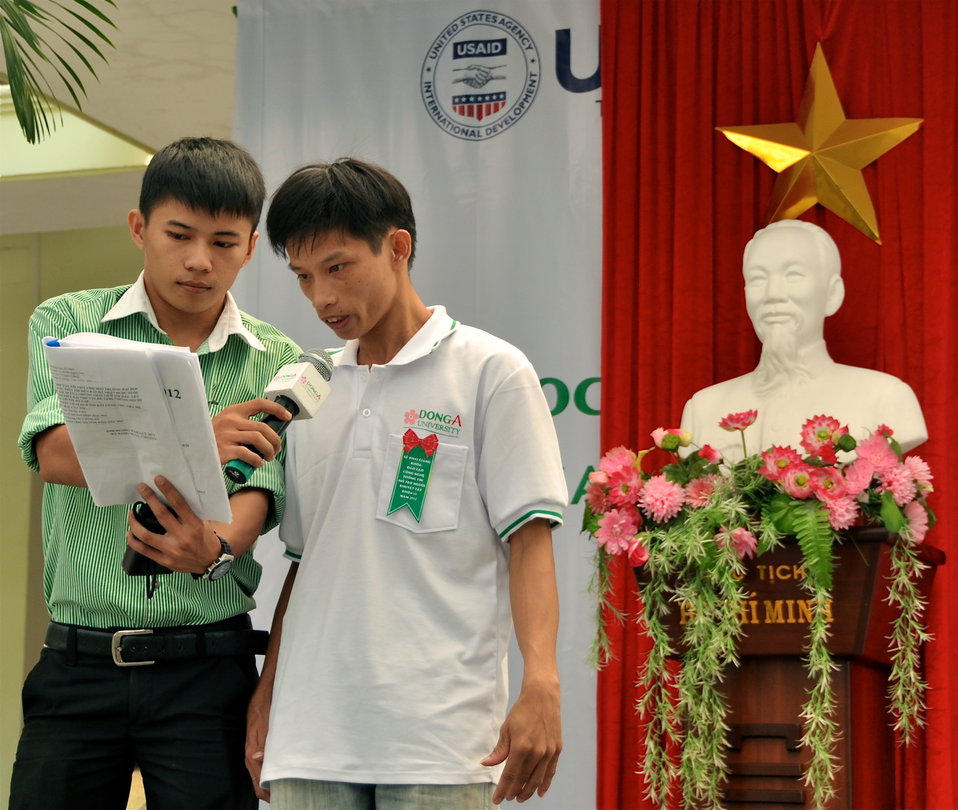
New class of students starts at Dong A Univeristiy with support from USAID and CRS

Photo: @USAIDVietnam
December 3, 2012